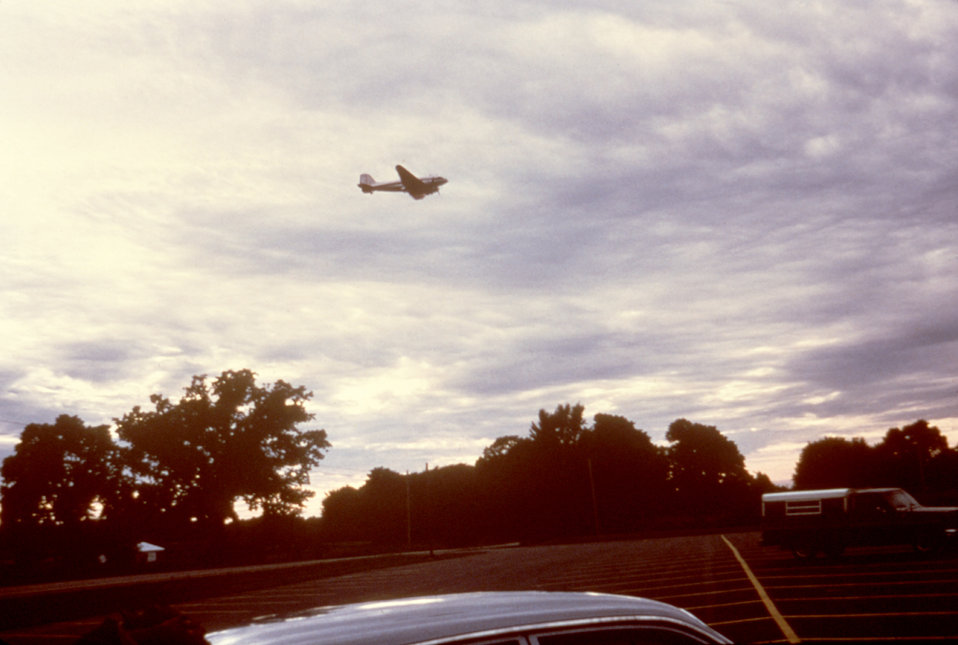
This 1980 evening-time photograph depicts a DC-3 aircraft used in the dispersal of ultra-low volume (ULV) Malathion insecticidal fog in order to control populations of potential insect disease vectors.